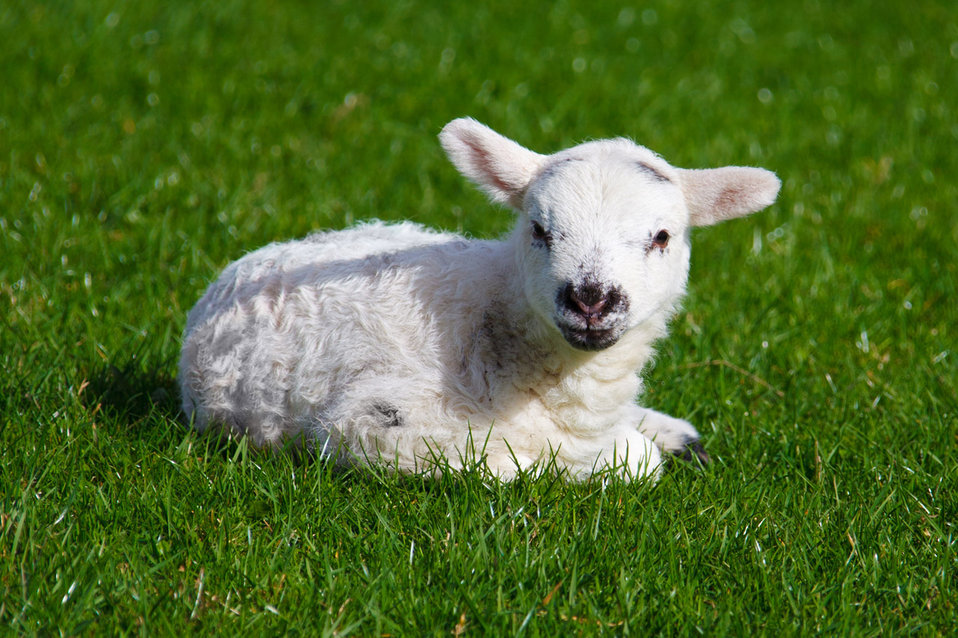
Baby lamb

New born cute lamb on green grass.